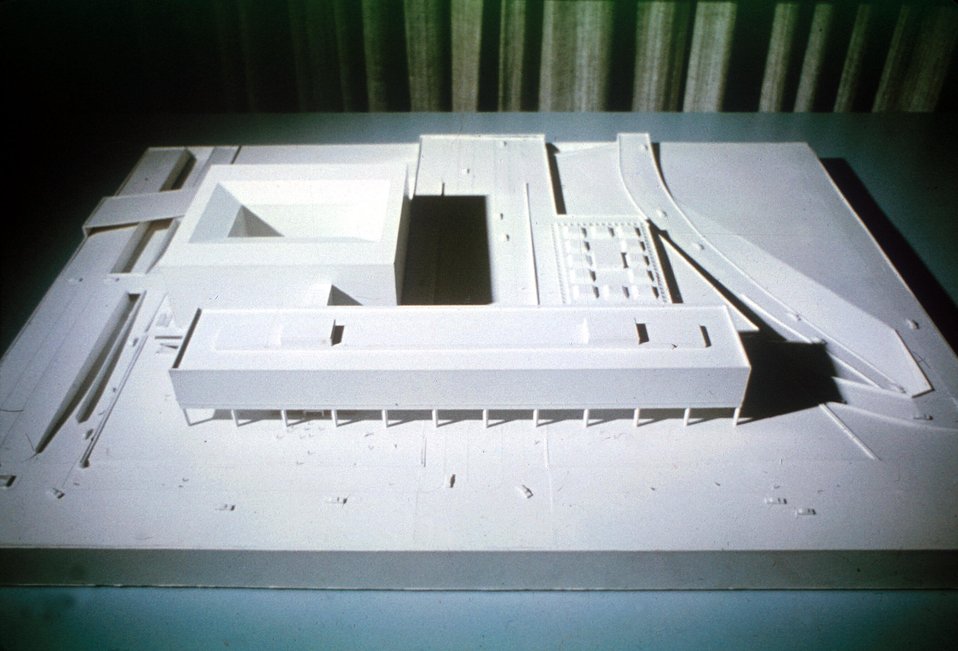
Federal Office building No. 5 Washington DC